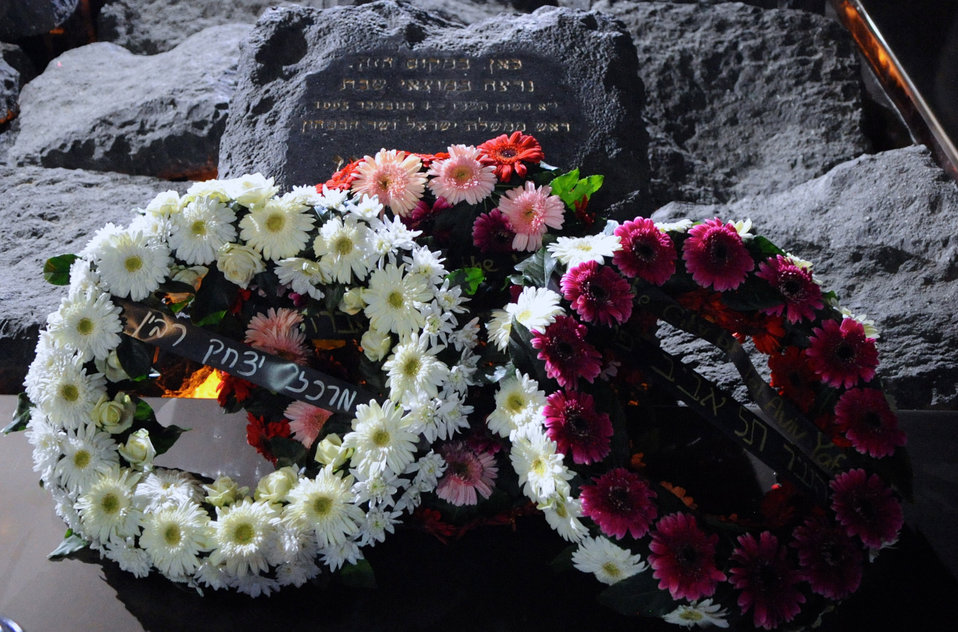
Wreaths Adorn the Memorial at Yitzhak Rabin's Assassination Site

Wreaths adorn the memorial marking the site where former Israeli Prime Minister Yitzhak Rabin was assassinated in 1995, after U.S. Secretary of State John Kerry made a stop in Tel Aviv, Israel, on November 5, 2013.